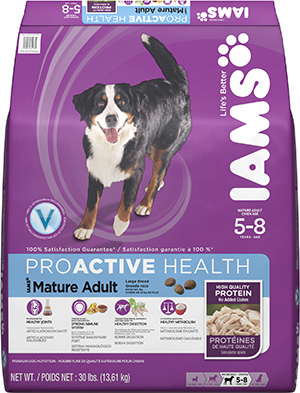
RECALLED – Dog and Cat foods - Dry

August 14, 2013 – Product Recall – P&G Voluntarily Recalls Limited Quantity of Dry Pet Food Due to Possible Health Risk.